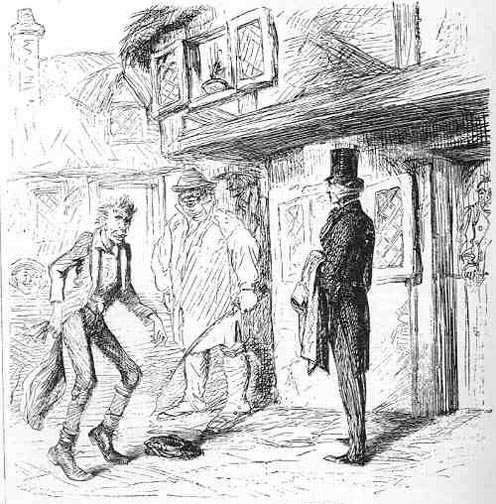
Great Expectations, Trabb's boy mocks Pip in the village highstreet, outside the post-office, by John McLenan. Français : Les Grandes Espérances, le garçon de courses de Trabb, imitant les nouvelles manières de PIp devant la poste du village, par John McLenan.